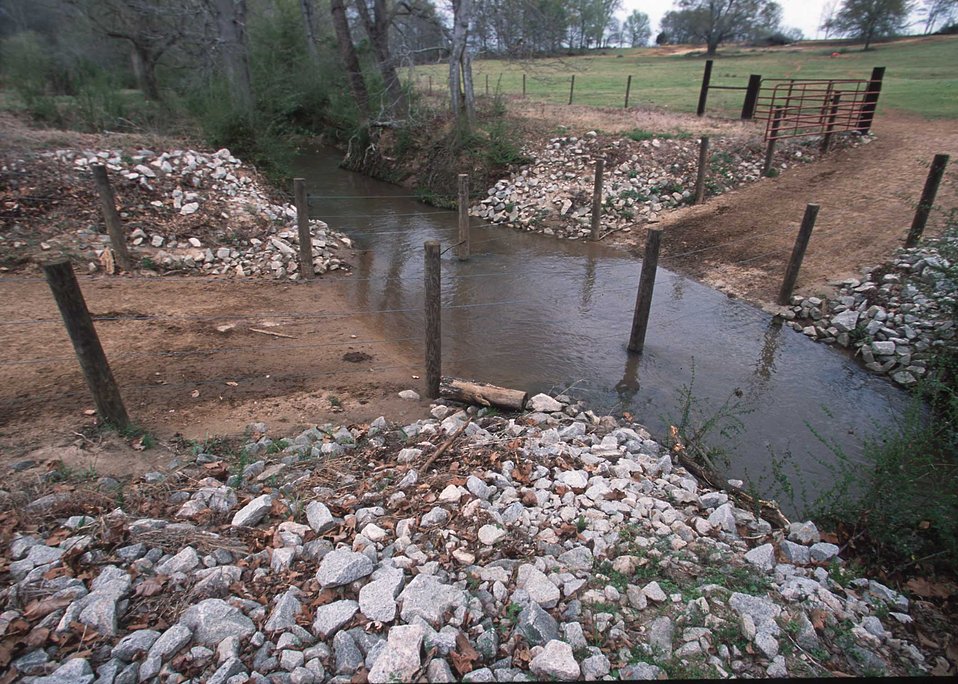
Concrete water crossing for livestock. Buffers and fencing for livestock exclusion are also part of the NRCS practices Georgia.